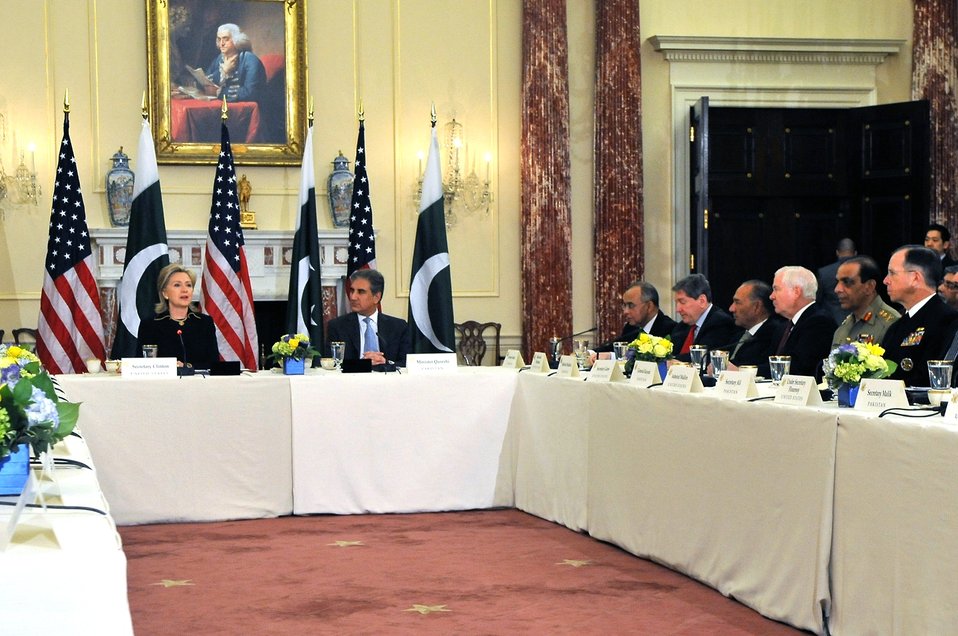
Secretary Clinton Hosts the U.S. Pakistan Strategic Dialogue Meeting

U.S. Secretary of State Hillary Rodham Clinton speaks at the opening of the U.S. Pakistan Strategic Dialogue meeting, featuring Pakistani Foreign Minister Makhdoom Shah Mahmood Qureshi, at the U.S. Department of State in Washington, D.C., March 24, 2010.